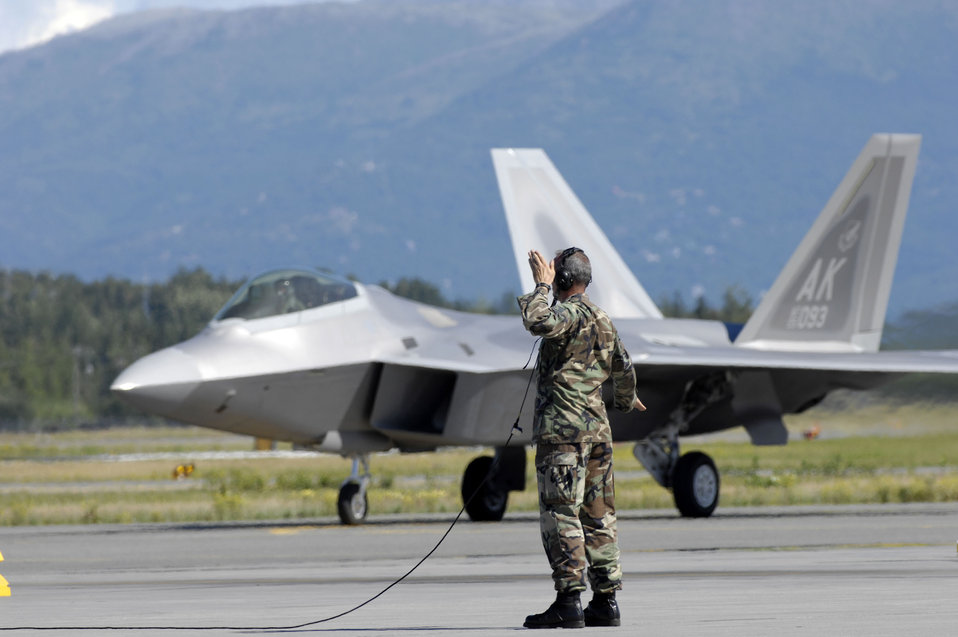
Elmendorf welcomes F-22 Raptor

A crew chief marshals an F-22 Raptor into place at Elmendorf Air Force Base, Alaska, during a ceremony marking the aircraft's arrival Aug. 8. Six F-22s took part in the ceremony, with the base scheduled to receive 34 additional aircraft. Elmendorf should have its full complement of 40 aircraft by December 2009.